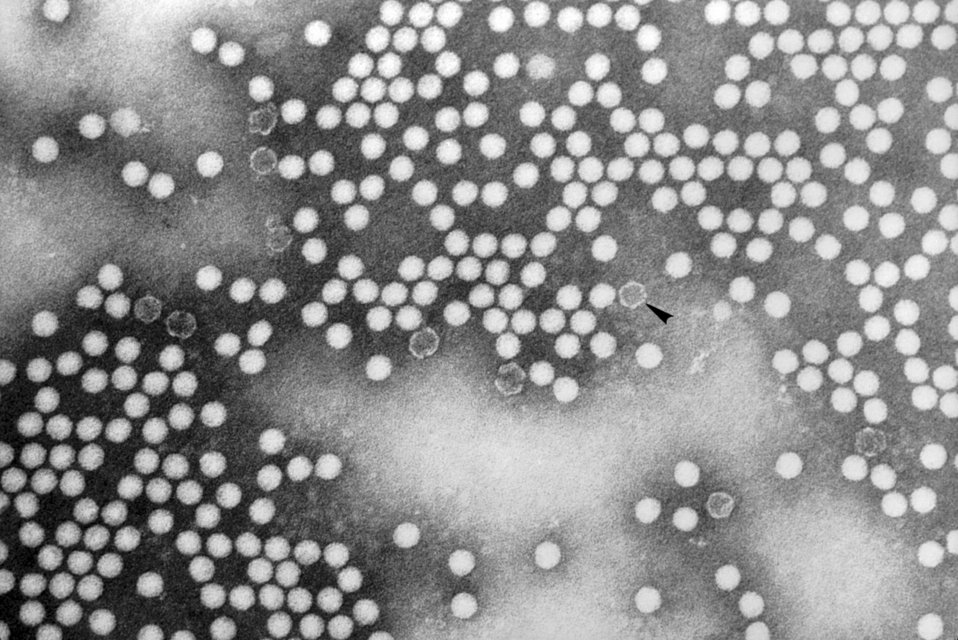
Transmission electron micrograph (TEM) of poliovirus type 1.